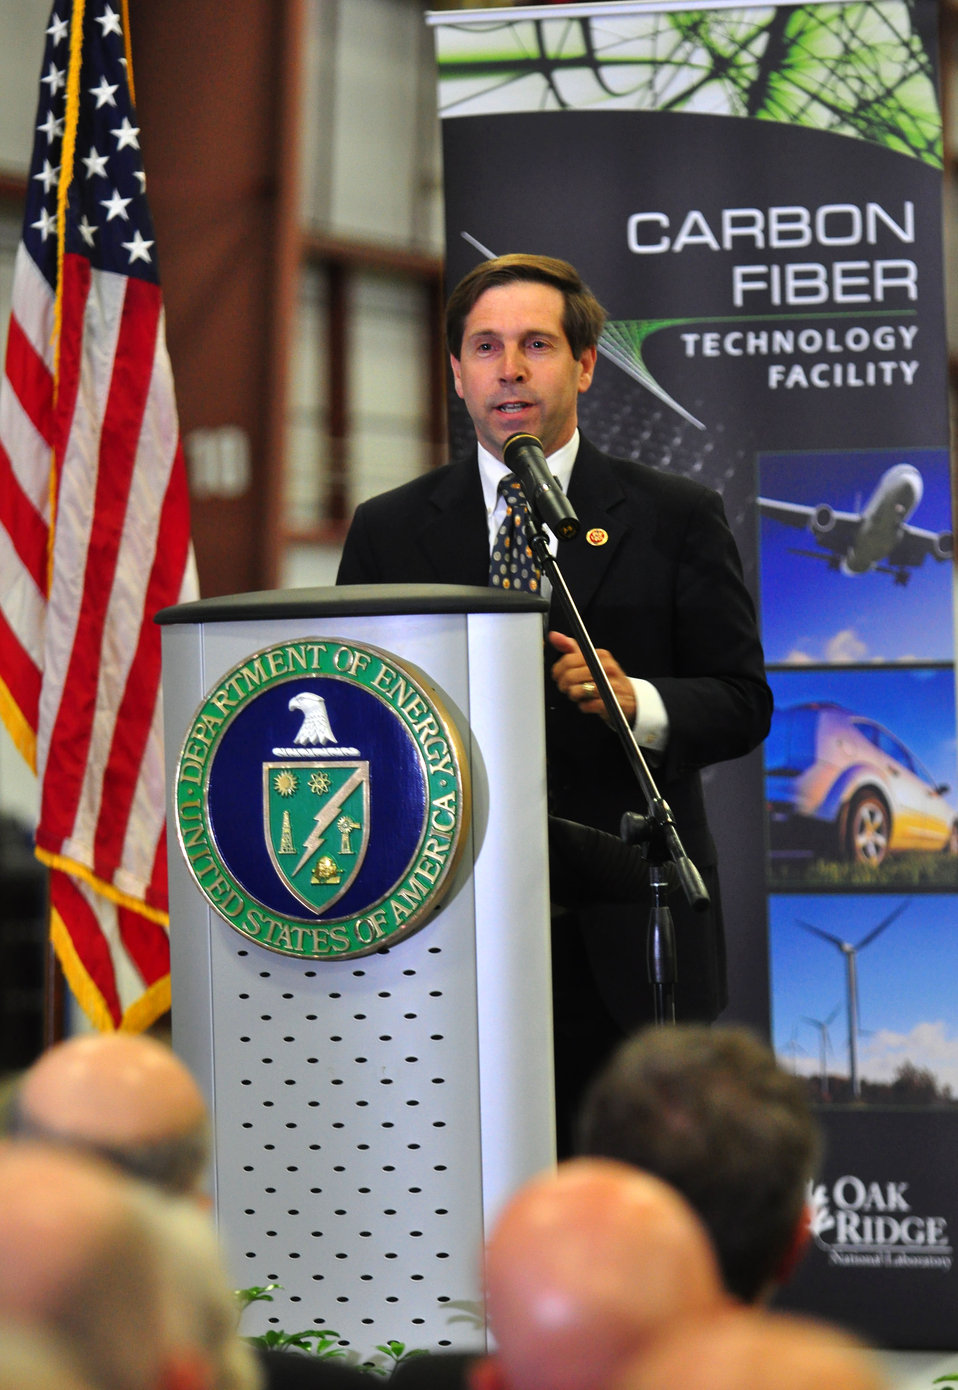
Carbon Fiber Technology Facilty Open House Oak Ridge Tennessee

13-025 DOE photo Lynn Freeny
Tennessee Congressman Chuck Fleischmann